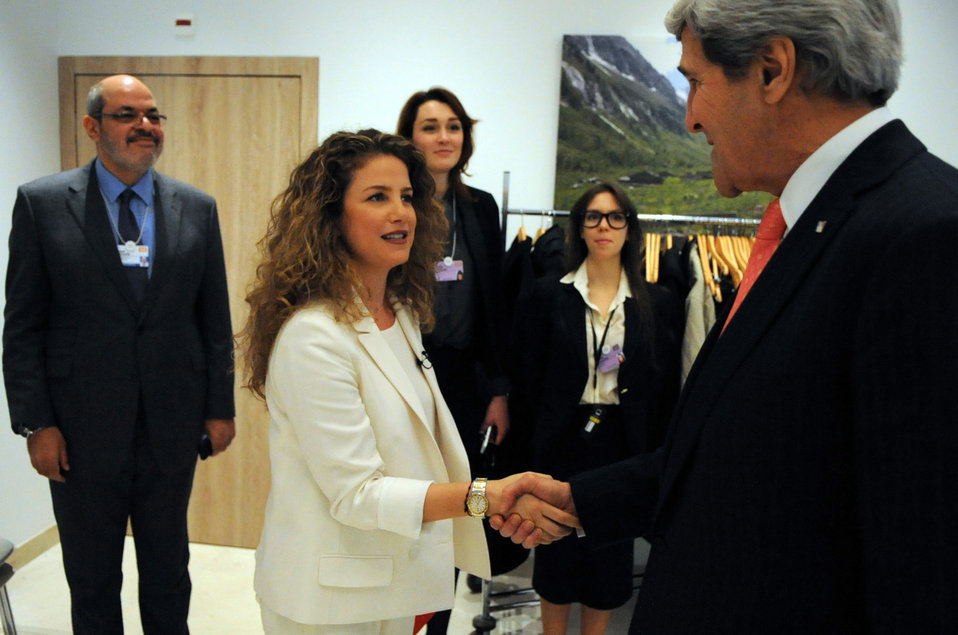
Secretary Kerry Greets Al Arabiya Host Maktabi Before Interview in Switzerland

U.S. Secretary of State John Kerry says hello to Al Arabiya Correspondent Rima Maktabi before the two sit down for an interview amid the World Economic Forum in Davos, Switzerland, on January 23, 2014.